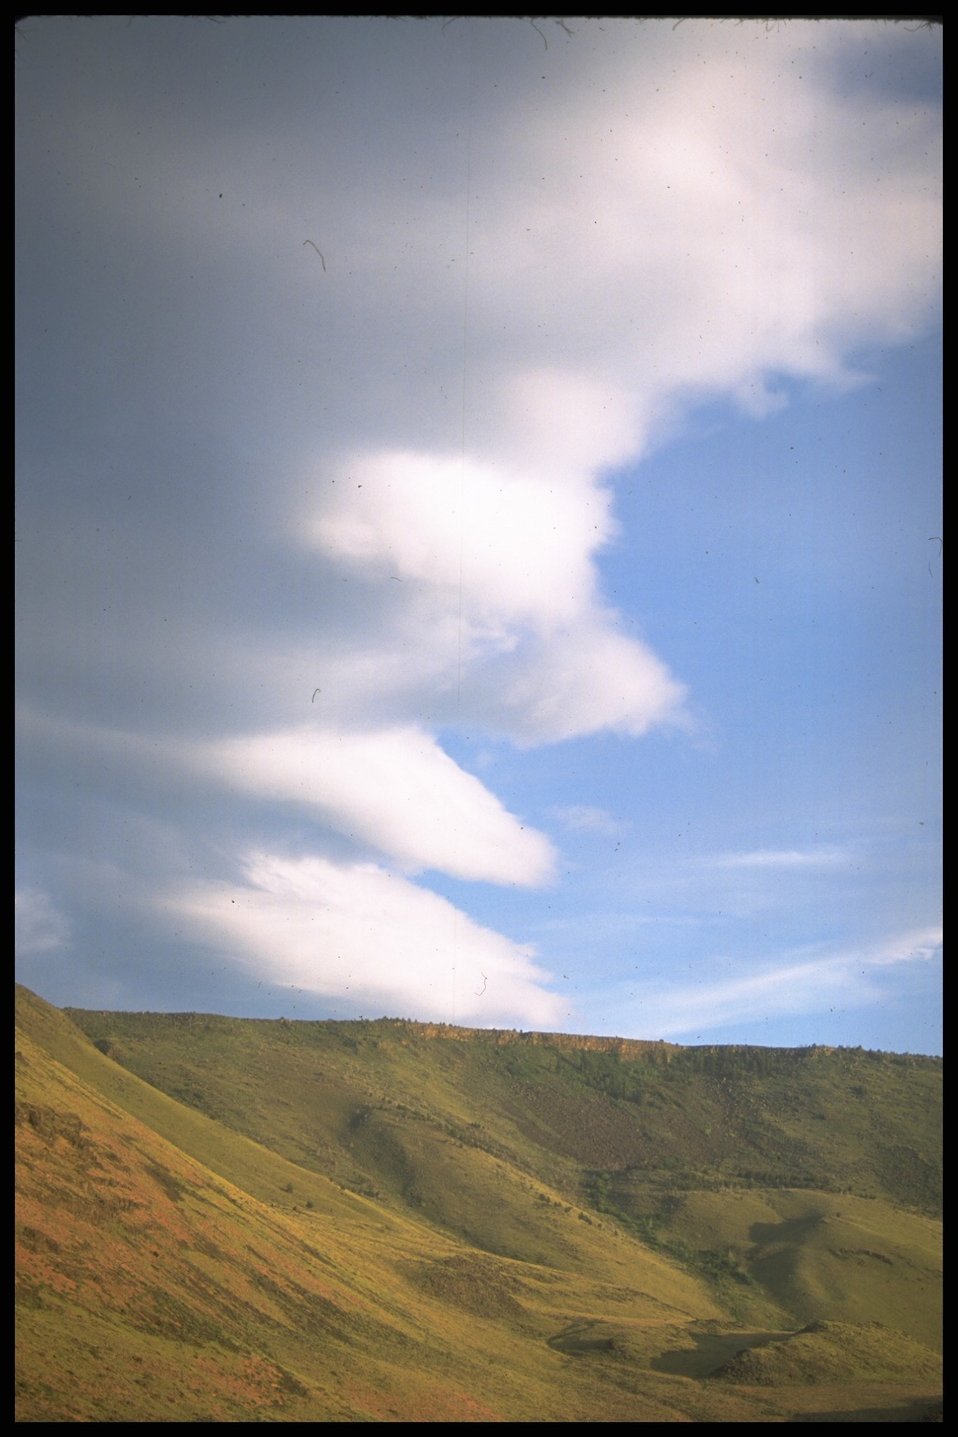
Scenic view of Abert Rim, Lakeview District.